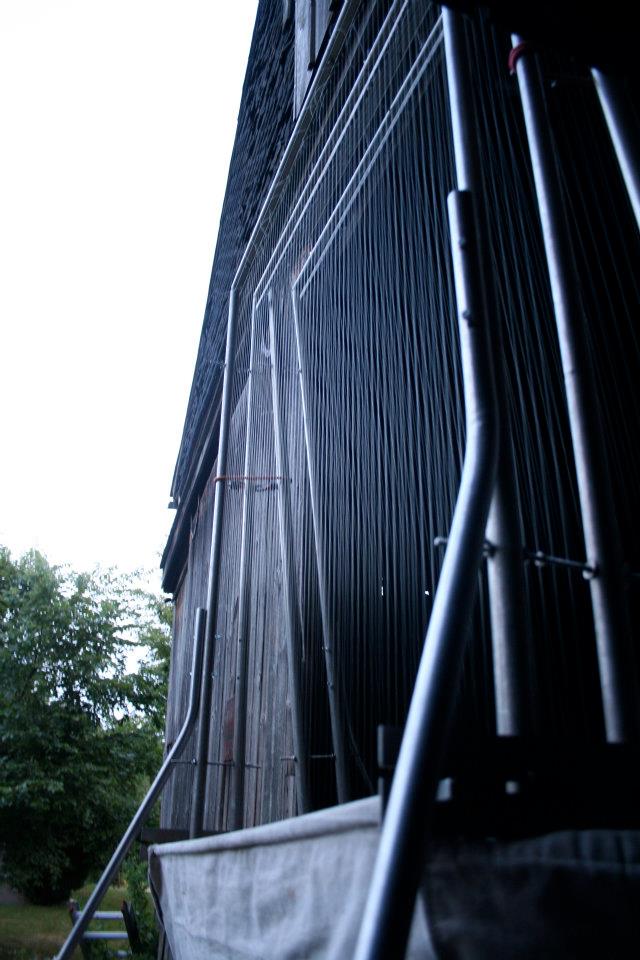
Harp trap in front of barn